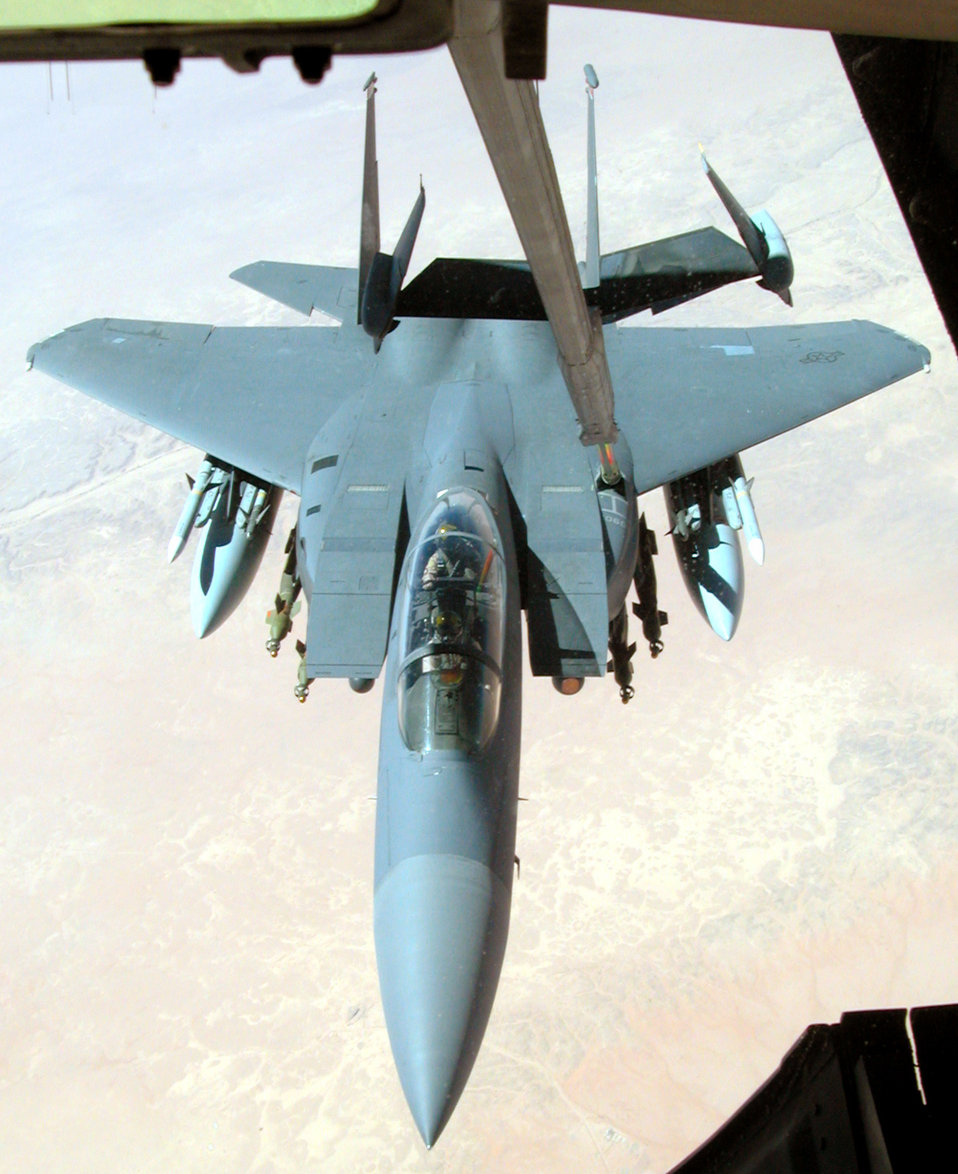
Fueling 'Freedom'

OPERATION IRAQI FREEDOM -- A KC-10A Extender refuels an F-15E Strike Eagle on a combat patrol over Iraq. The aircraft are part of the 380th Air Expeditionary Wing at a forward-deployed location. The KC-10As are from the 305th Air Mobility Wing at McGuire Air Force Base, N.J., and the F-15Es are from the 48th Fighter Wing at Royal Air Force Lakenheath, England.